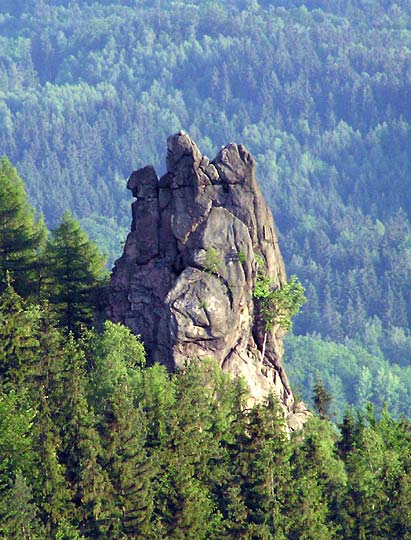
Polski: Skałka Jastrzębia Turnia na Krzyżnej Górze w Rudawach Janowickich nieopodal Karpnik. Widok z Sukiennic. Oświadczam, że jestem autorem zdjęcia i nadaję mu status PD. Andrzej Makarczuk